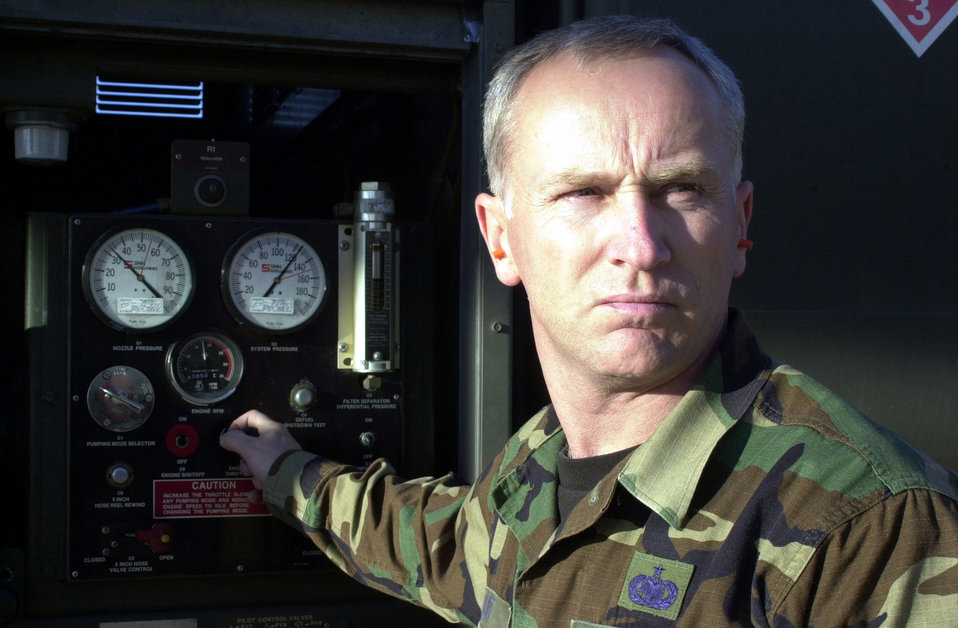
Keeping the food flying

OPERATION ENDURING FREEDOM -- Tech. Sgt. Chris Hunt from the 434th Air Refueling Wing at Grissom Air Reserve Base, Ind., prepares to refuel a C-17A Globemaster III cargo aircraft at an operating location in support of Operation Enduring Freedom. In November, the World Food Program -- with U.S. assistance -- has delivered enough food to feed more than 4.3 million people.